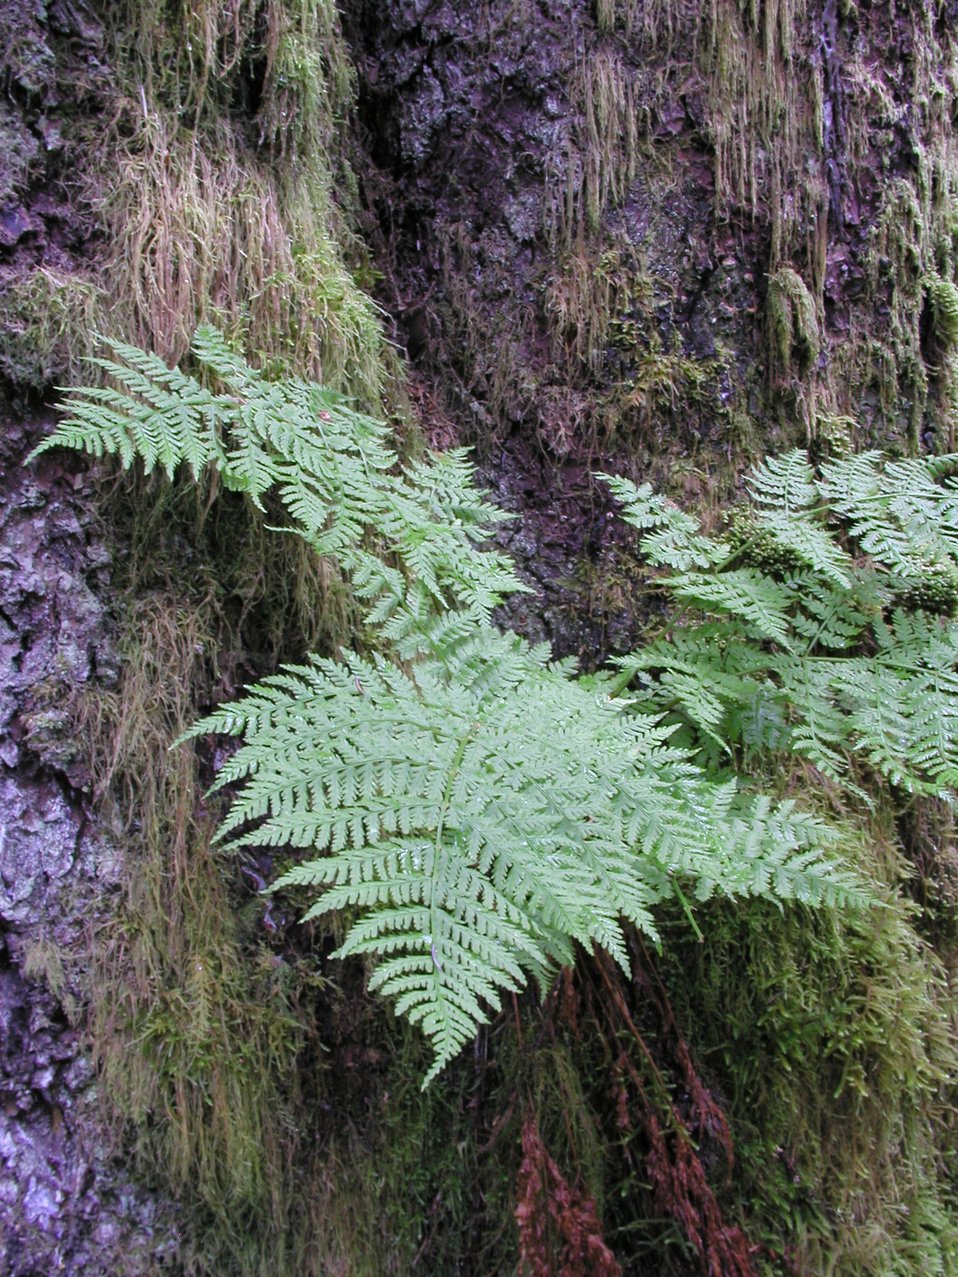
Ferns, moss, and bark in the forest on Spruce Island